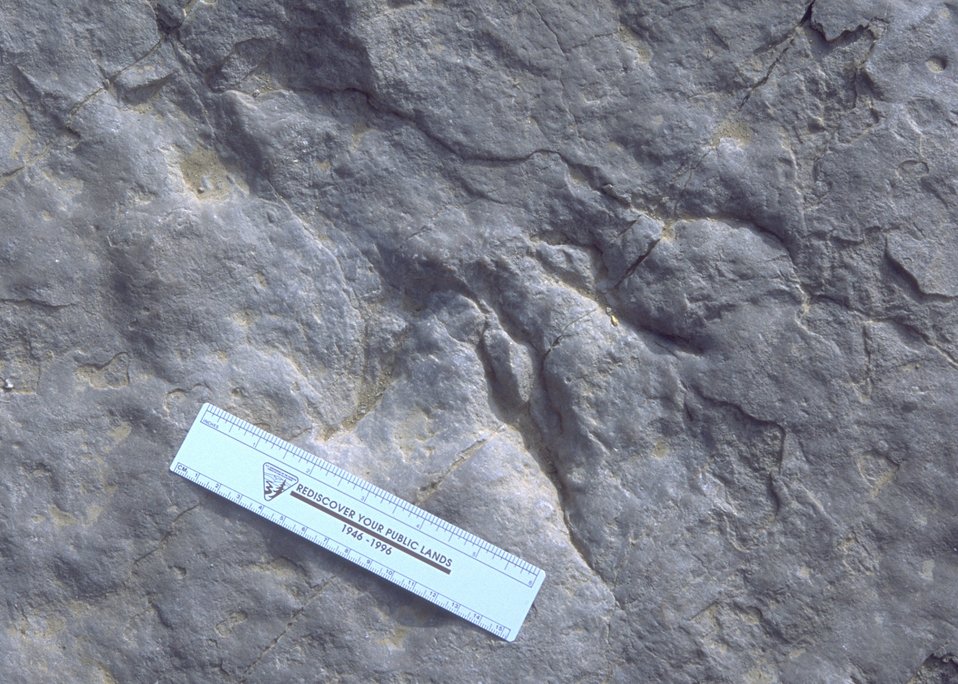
Detail of dinosaur track at the Red Gulch Dinosaur Tracksite, Worland Field Office.